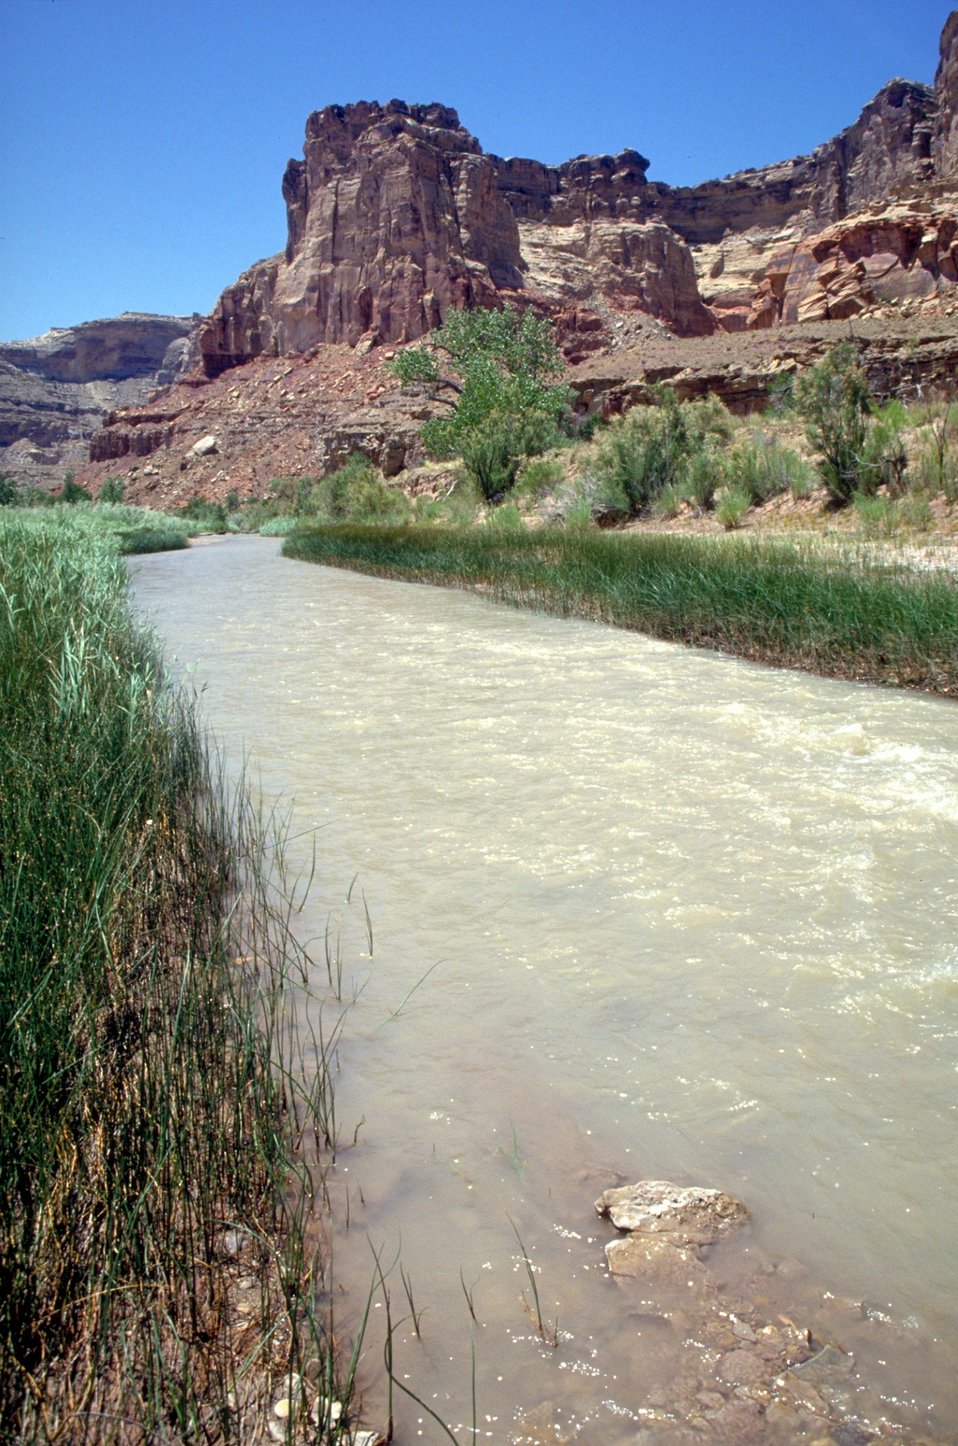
Upper Muddy Creek along the Red Canyon Loop, San Rafael Swell.